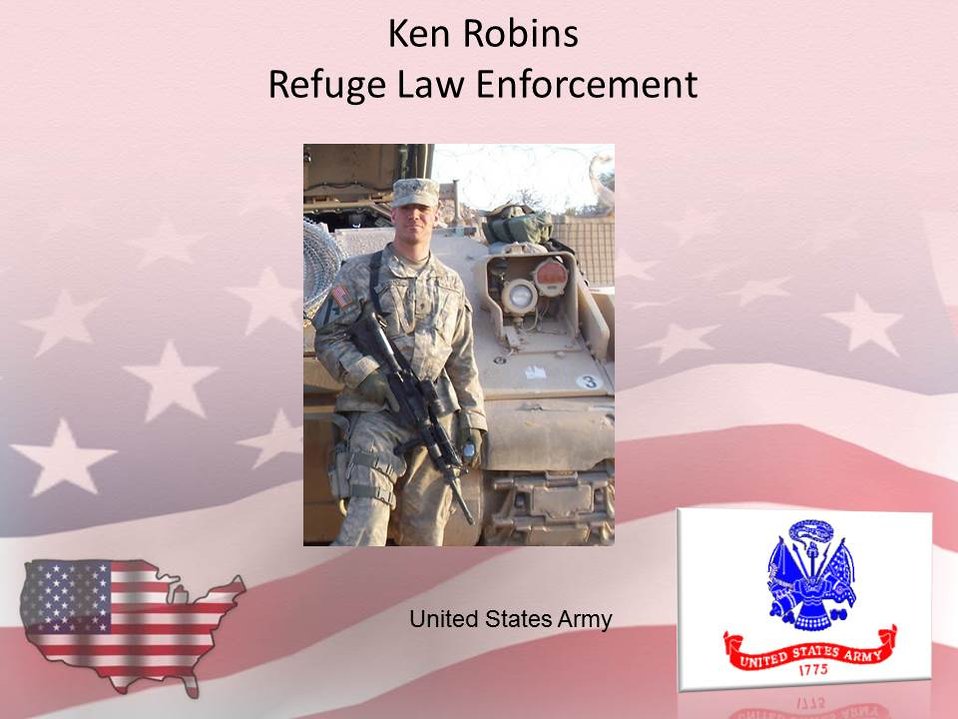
Ken Robins